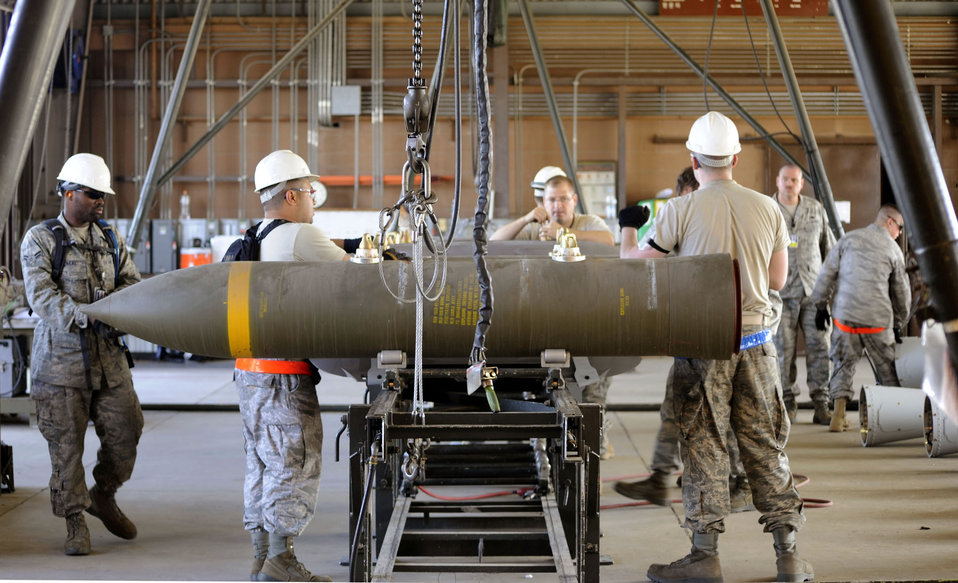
Osan Airmen host munitions exercise

Multiple munitions maintainers from around the Pacific assemble BLU-109 munitions in the small bomb pad during the Combat Ammunitions Production Exercise May 25, 2010, at Osan Air Base, South Korea. CAPEX is a non-rated exercise held once a year in the Pacific Air Forces region. It provides training on non-nuclear reserve munitions production in integrated tasks orders and planning.